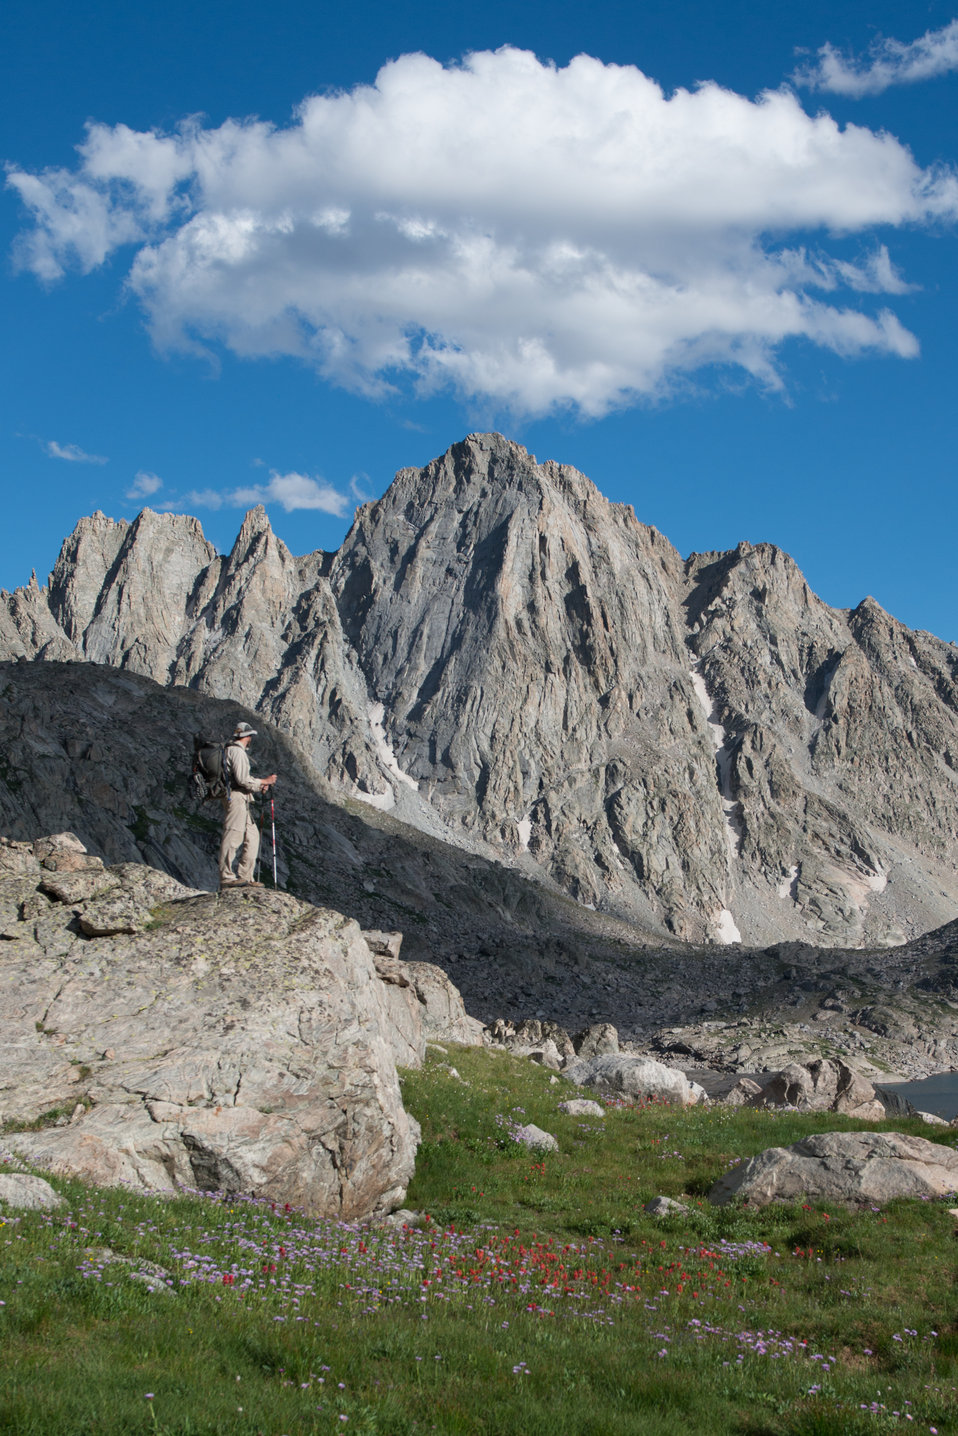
Clearer air -Harrower Peak and Flowers-12

Visitors to Harrower Peak on the 392,160-acre Bridger Wilderness in Wyoming expect miles of uninterrupted views. Since 1988, the U.S. Environmental Protection Agency (EPA), states, and federal land management agencies, including the U.S. Forest Service, have conducted monitoring of air pollution and visibility impairment at a number of national parks and wilderness areas across the U.S.